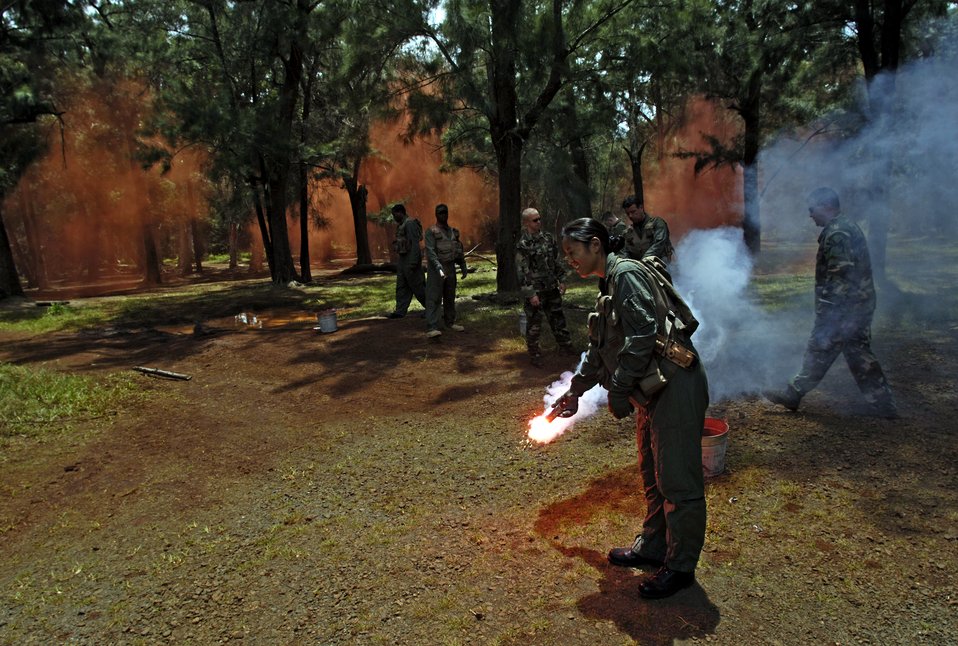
Survival refresher course

Students practice igniting survival flares during a ground survival refresher course at Schofield Barracks, Hawaii, on Thursday, May 4, 2006. The course provides realistic training for aircrew members and concentrates on the principles, techniques and skills necessary to survive in any environment.